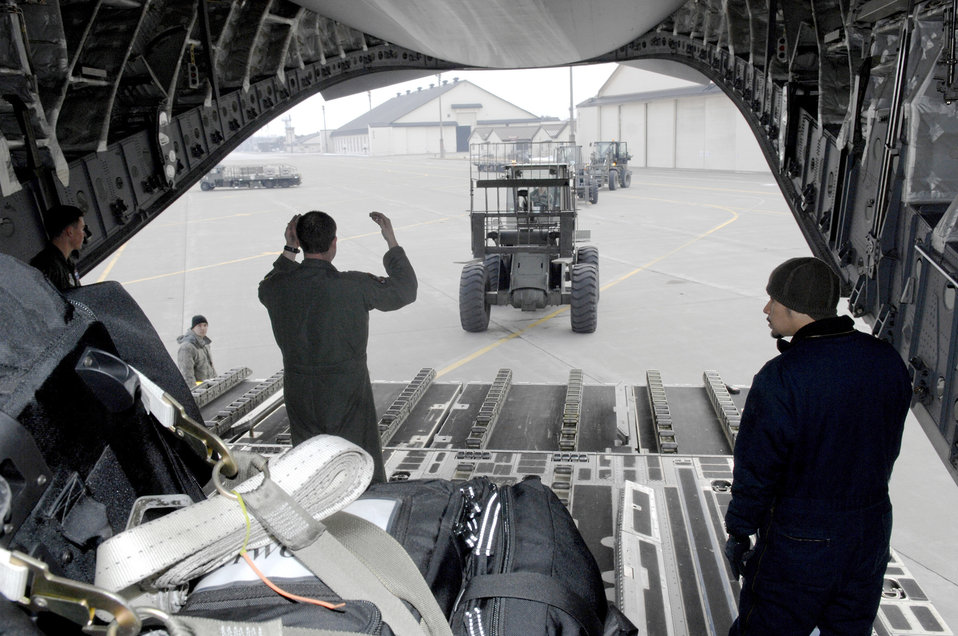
Emergency Response for Japan's Earthquake disaster

U.S. Air Force Airman 1st Class Rick Eld, Loadmaster with the 4th Airlift Squadron, McChord AFB Wash directs a forklift driver at Misowa Air Force Base, Japan during an emergency response on March 13, 2011. Aircrew from the 4th Airlift Squadron, McChord AFB, Wash. are transporting members and equipment for Los Angeles Search and Rescue team to Japan to aid in recovery and care of victims of the recent earthquake.